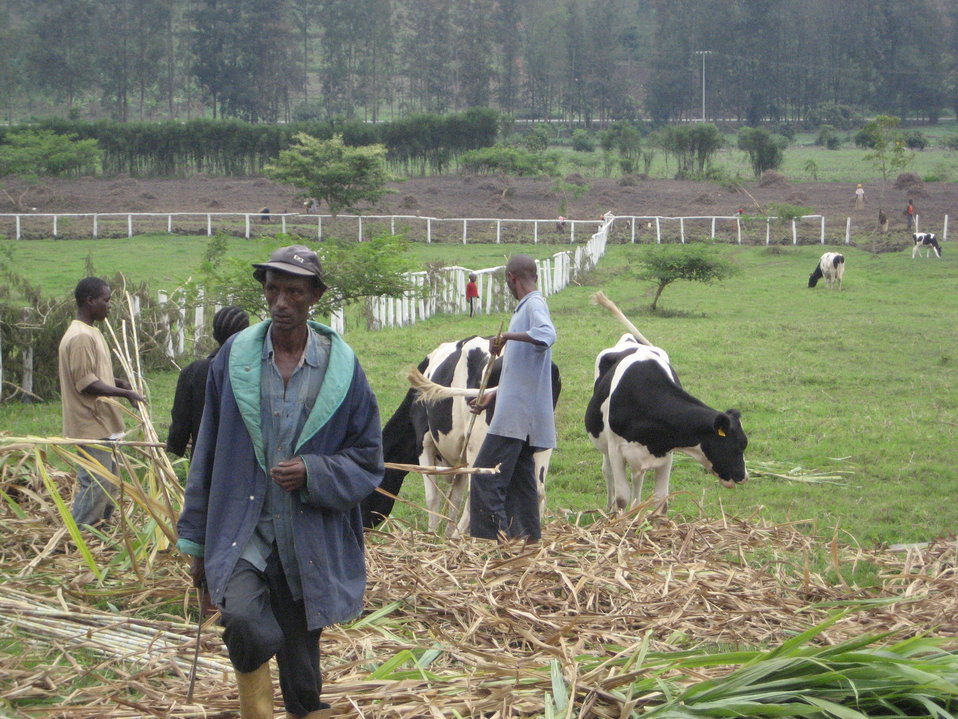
Deputy Secretary Neal Wolin’s trip to Africa 2009

Some 40 percent of the milk processed under the project comes from the surrounding fields.